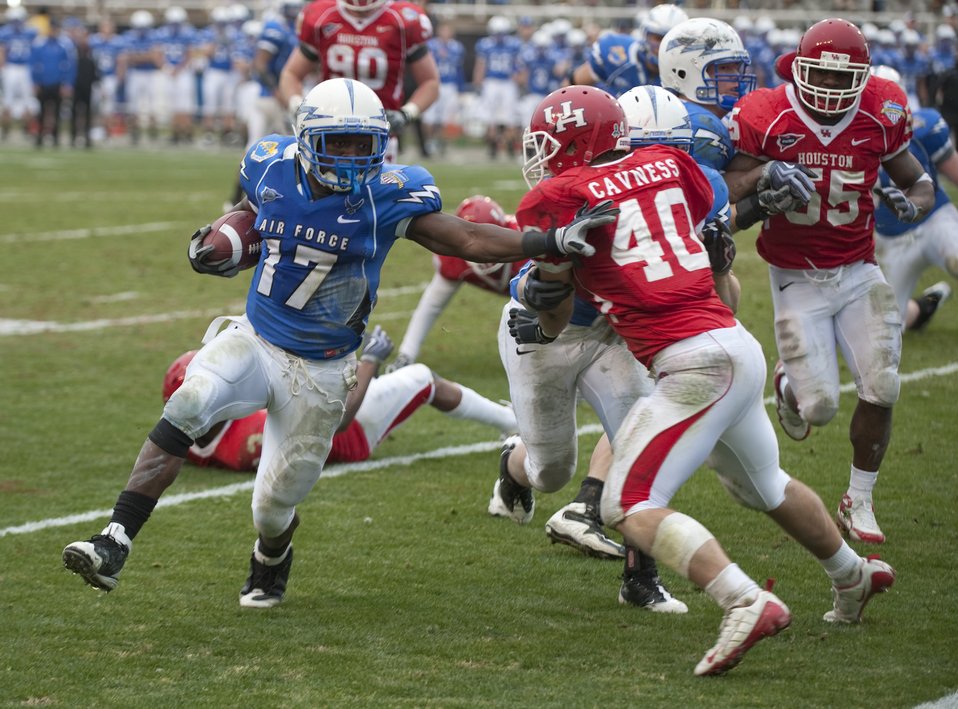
Armed Forces Bowl

Air Force Academy running back Asher Clark runs for a touchdown during the Falcons' defeat of the University of Houston Cougars 47-20 at the Bell Helicopter Armed Forces Bowl in Fort Worth, Texas, Dec. 31, 2009.